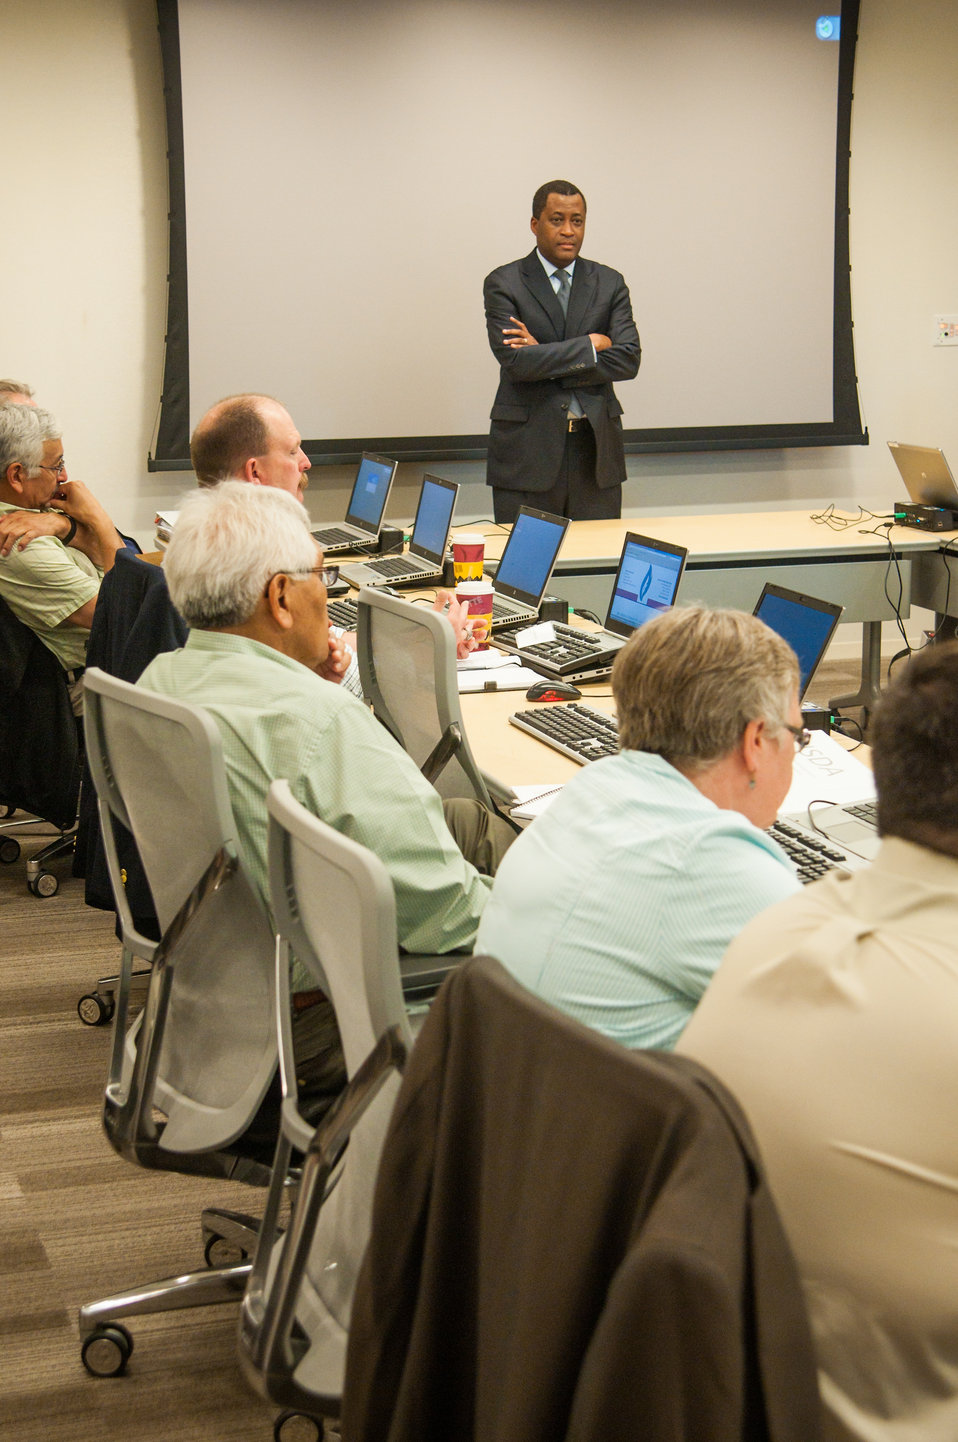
U.S. Department of Agriculture (USDA) Assistant Secretary for Civil Rights Dr. Joe Leonard, Jr. listens to questions posed by participants during the USDA 2013 Land-Grant Development Tribal Fellows Program held in Washington, D.C. on Monday, Jun. 03, 2013. Dr. Leonard discussed USDA’s Civil Rights efforts to level the playing field to ensure that all groups have equal access to federal resources.